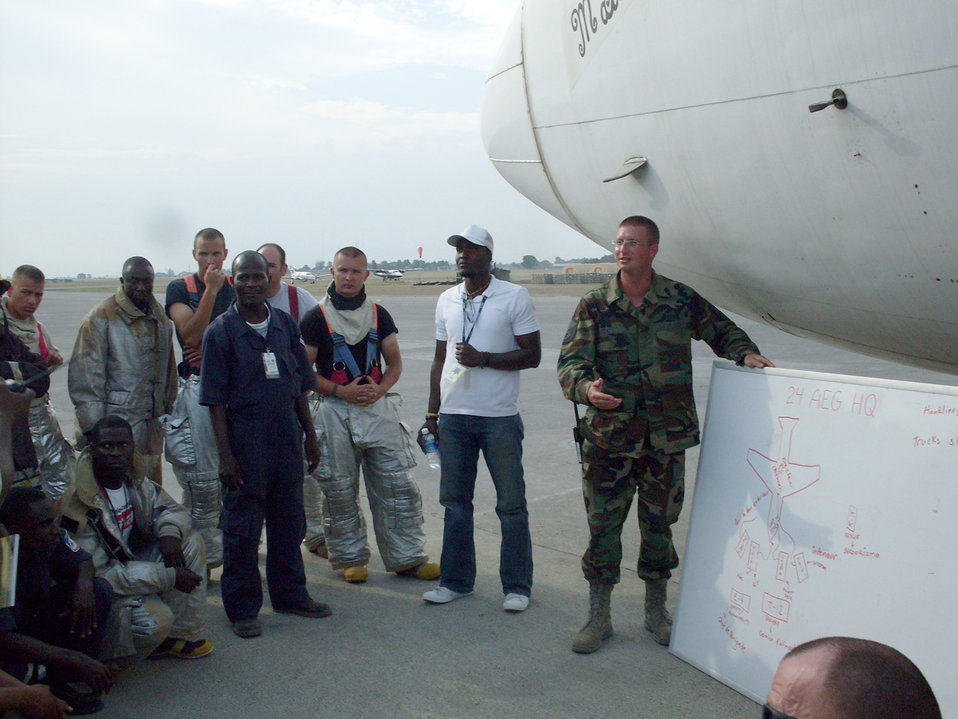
Air Force firefighters in Haiti dig through rubble, protect airfield resources

Master Sgt. Bradley Beaty instructs Haitian and Air Force crews on fire truck set up and entry procedures during a recent exercise at the airport in Port-au-Prince, Haiti. Sergeant Beaty is a firefighter assigned to Scott Air Force Base, Ill.